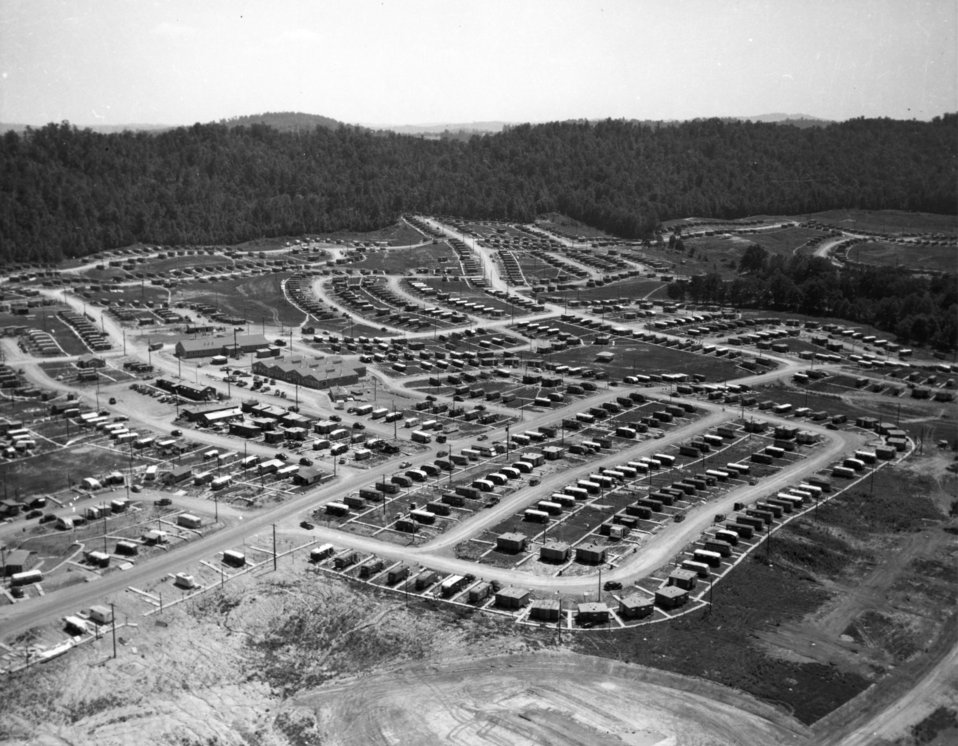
Aerial of Oak Ridge